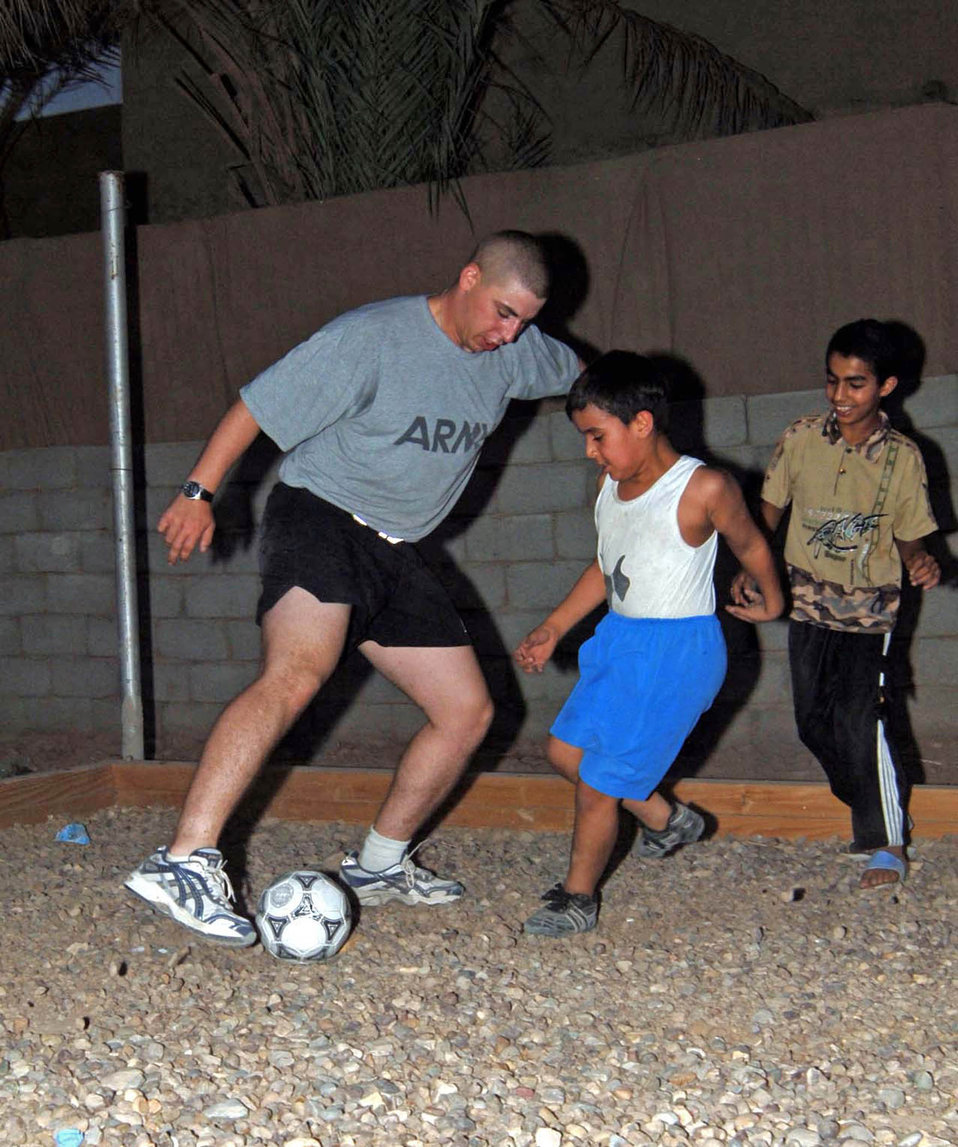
Airmen, Soldiers form relationships with Iraqi children

Army Spc. Kyle Hanlan plays an impromptu game of soccer with Iraqi children at the Victory Base Complex in Iraq. The visit was part of an Air Force effort to provide humanitarian aide to children of Iraqi soldiers. Specialiast Hanlan is a 447th Expeditionary Security Forces Squadron patrolman.